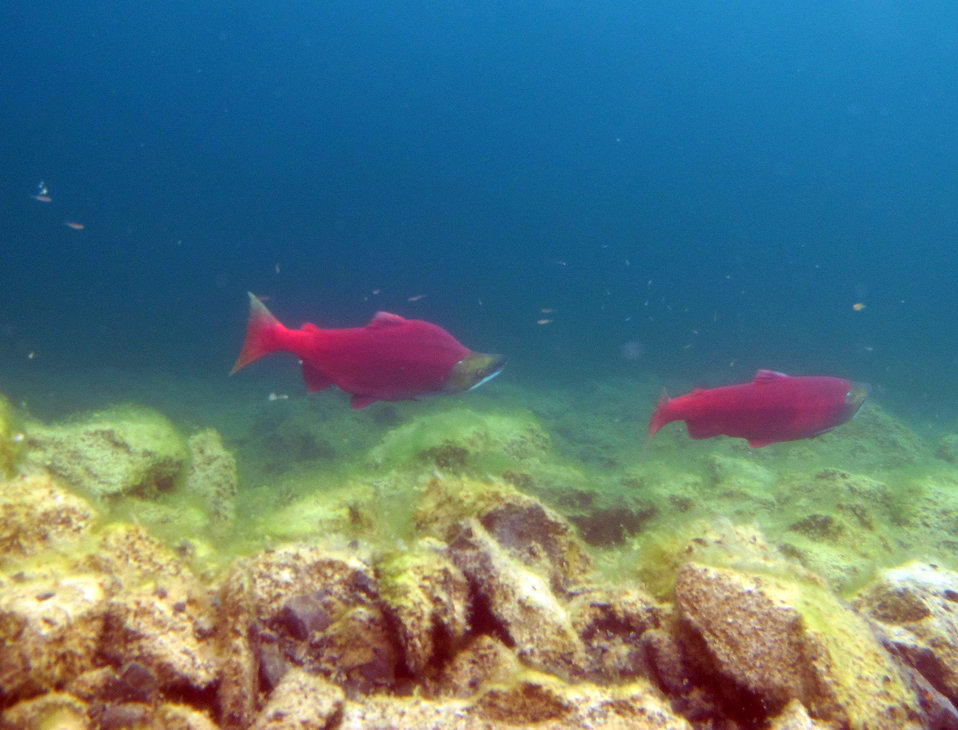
Sockeye pair in Hidden Lake

Juvenile fish are present as well!